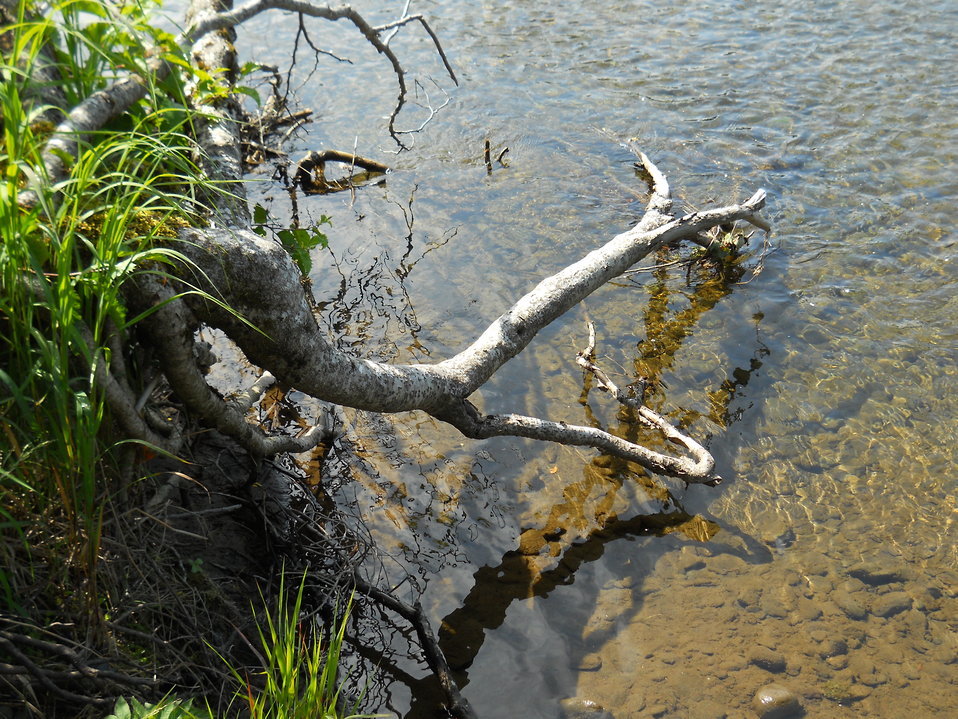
Tree Over Water

Credit: USFWS
Photo taken by a Salmon Camp participant during a nature photography activity.

Source and Contact: Kodiak National Wildlife Refuge